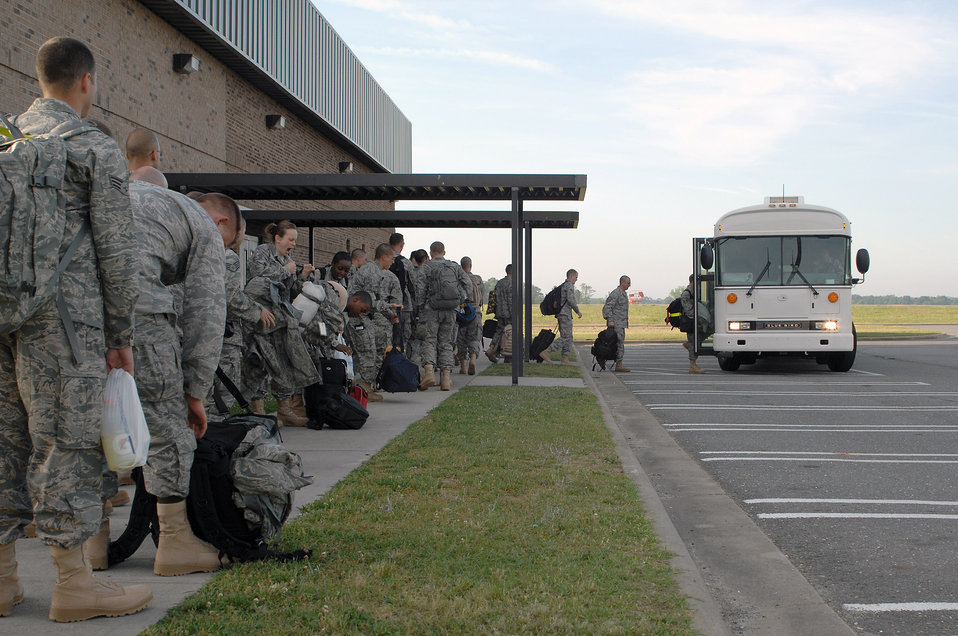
Airmen mobilize to confront Afghan insurgency

Airmen from the 4th Fighter Wing board a bus that will take them to a waiting aircraft April 29 at Seymour Johnson Air Force Base, N.C. More than 300 personnel deployed for a four-month rotation in support of Operation Enduring Freedom.